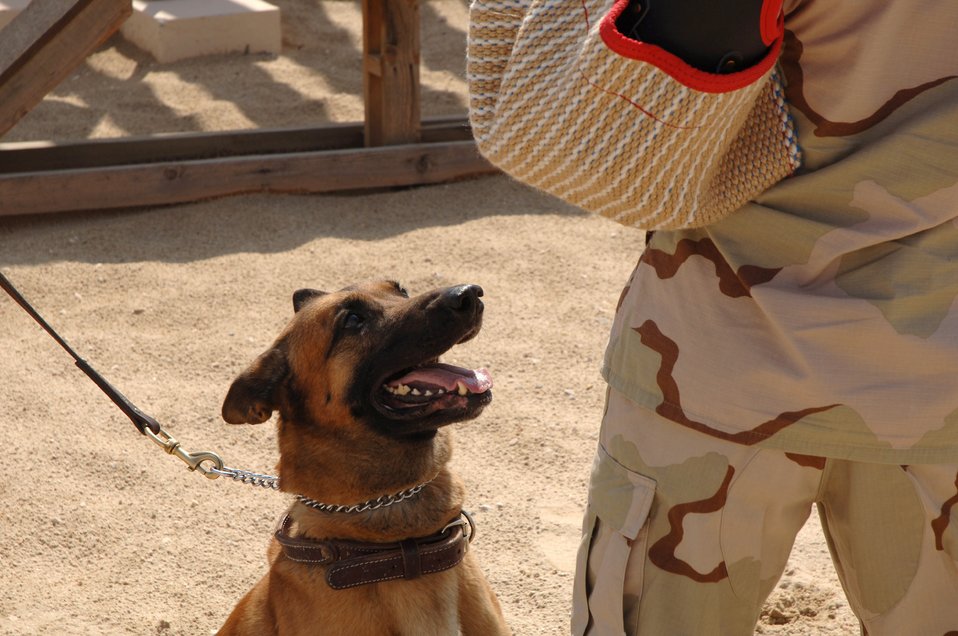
Partners in the desert

SOUTHWEST ASIA (AFPN) -- Rico, a military working dog, stares down an aggressor during training at a deployed location Feb. 24. The Belgian Malinois is with the 379th Expeditionary Security Forces Squadron.